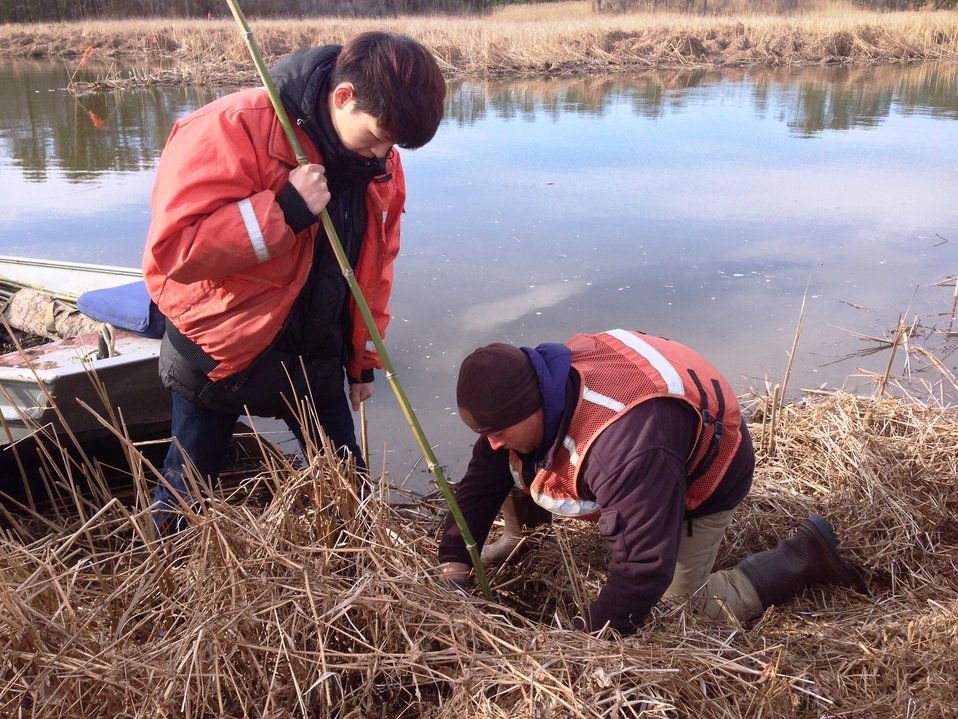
U.S. Department of Agriculture (USDA) Animal and Plant Health Inspection Service (APHIS) Wildlife Services (WS) eradication specialist Cory Abbott demonstrates setting a trap for nutria on the Wicomico River in Maryland to a South Korean researcher.